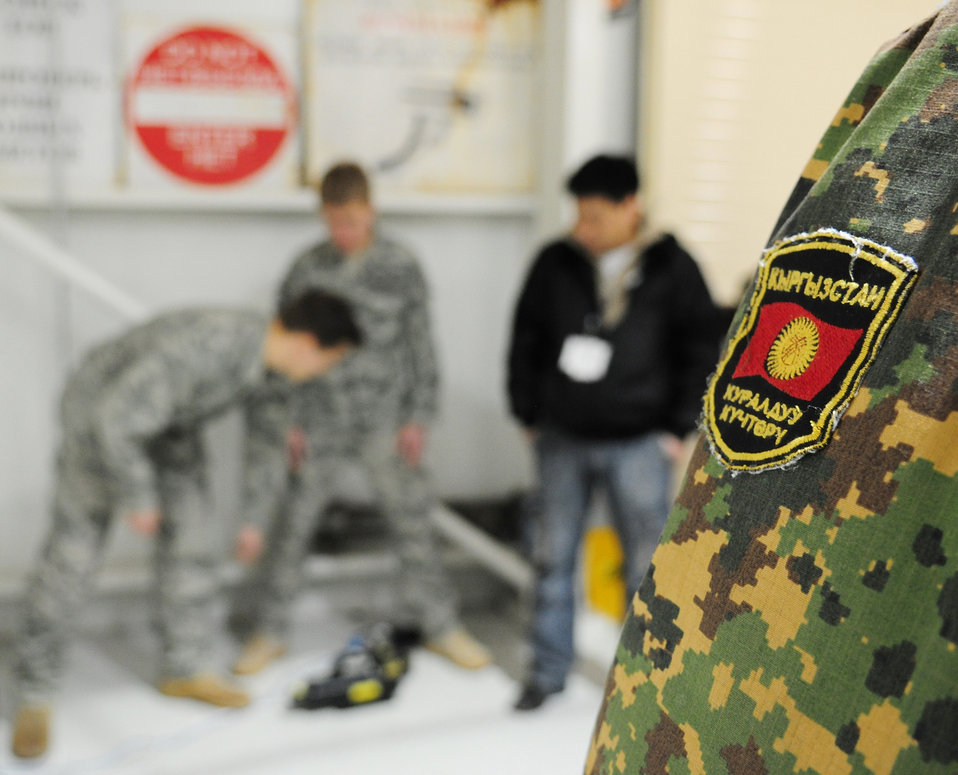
Joint EOD training benefits 2 nations

Kyrgyz army explosive ordnance disposal technicians visit the Transit Center at Manas, Kyrgyzstan, for a subject matter information exchange with EOD Airmen March 16, 2010.